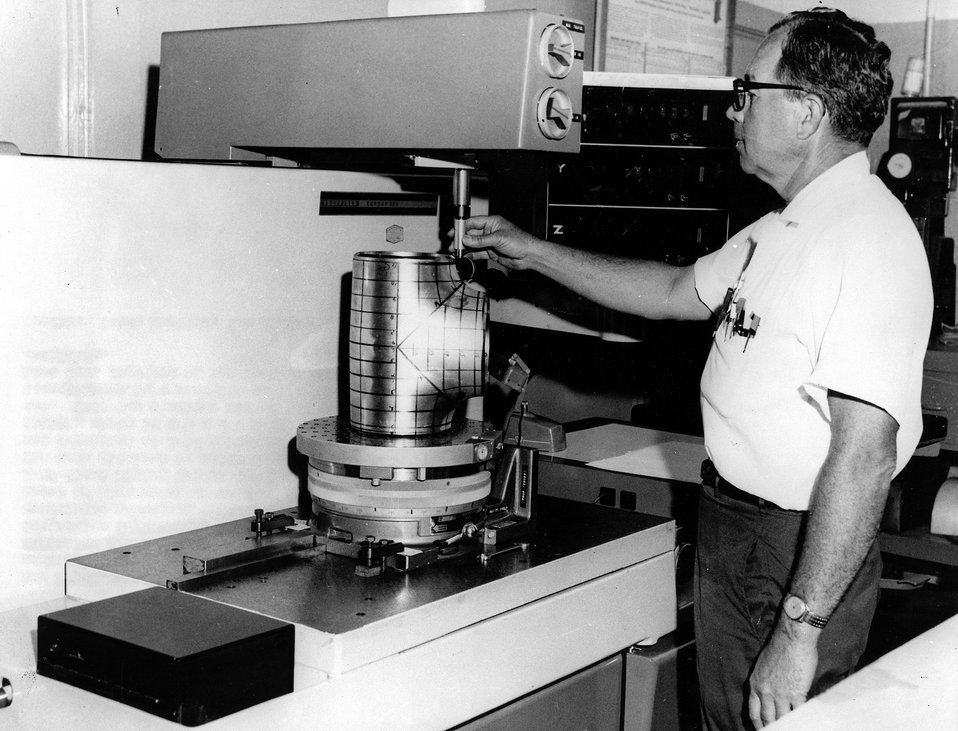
A three axis measuring machine is shown being used by the Oak Ridge Gaseous Diffusion Plant (OGRDP) Dimensional and Instrument Inspection Department, Laboratory Division, for coordinate plotting, contour and profile measurements of high pressure welding fittings for the X-10 Plant Piping Stress and Flexibility Studios. Circa 1968.